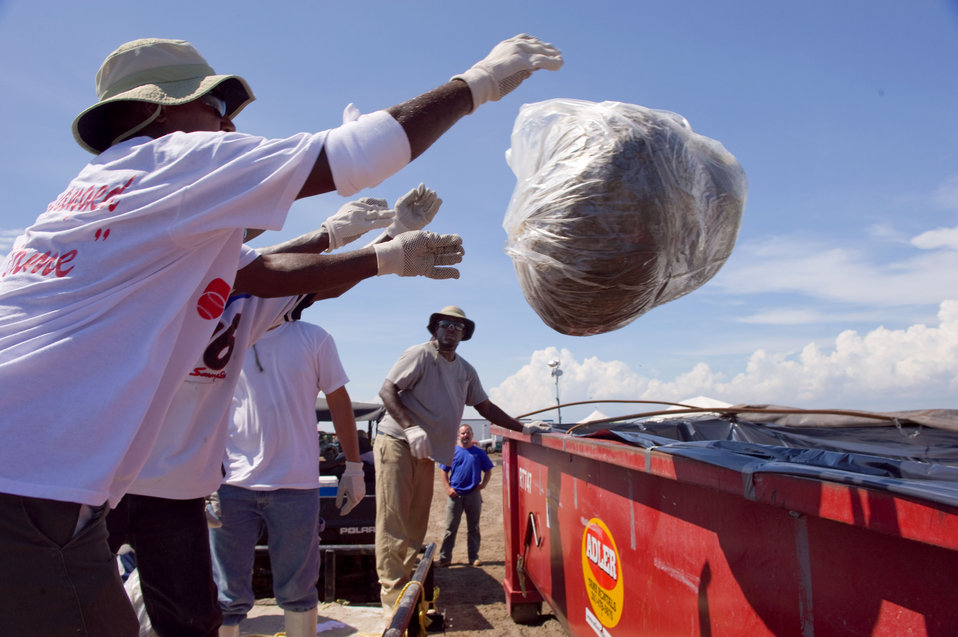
August 7, Work crews toss bagged waste into bins